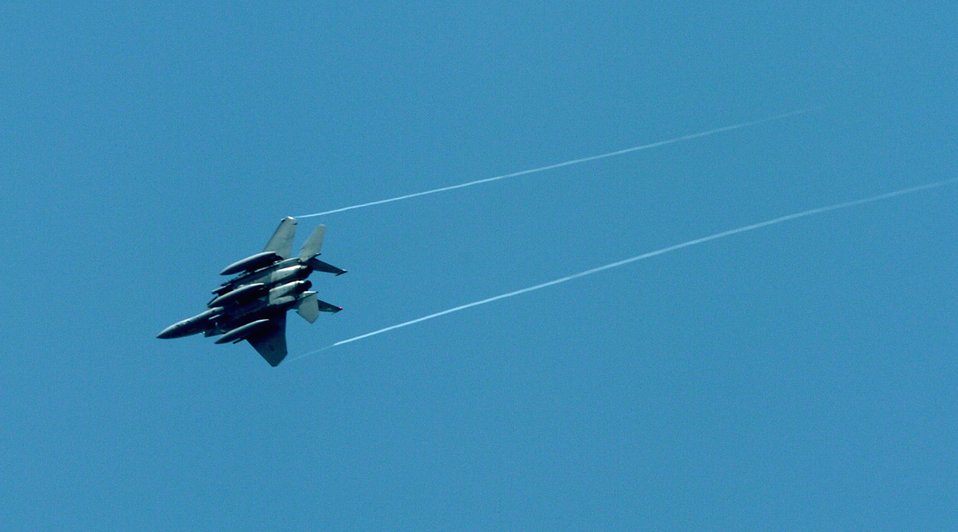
Atlantic Strike III

An F-15E Strike Eagle is called in by joint terminal attack controllers to provide a show of force on Thursday, March 30, 2006, during Atlantic Strike III at Avon Park, Fla.